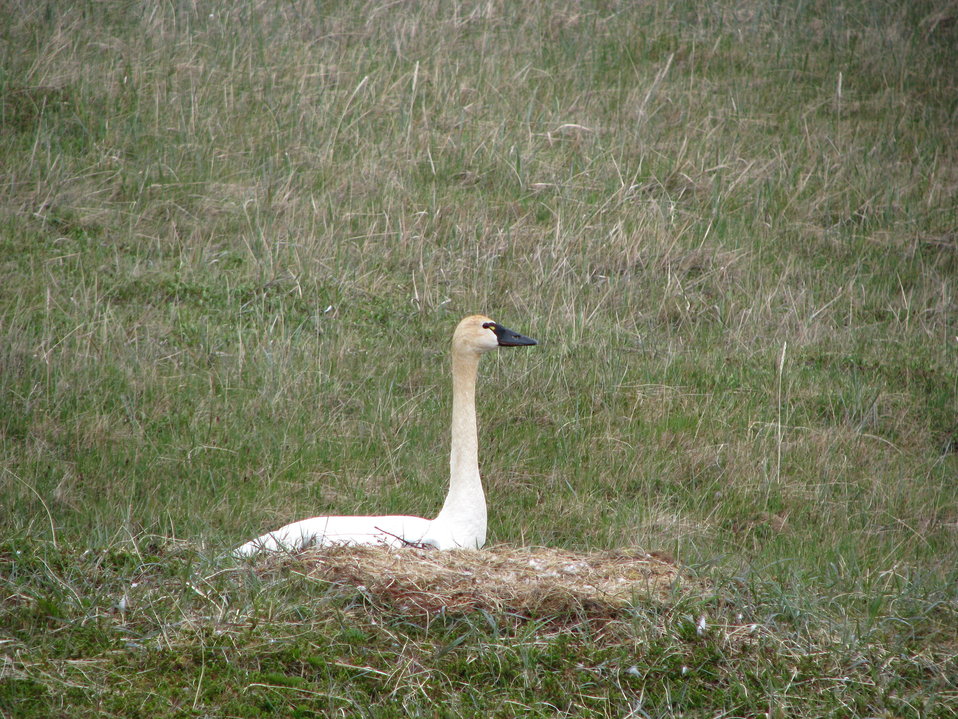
Tundra swan on nest

Yukon Delta NWR